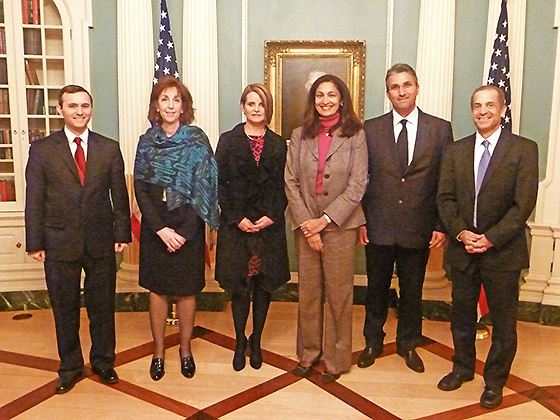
Committee to Protect Journalists Awardees Janet Hinostroza and Nedim Sener With Senior Advisor Tillemann, Assistant Secretary Jacobson, Acting Assistant Secretary Zeya, and Deputy Assistant Secretary Toner

From left to right, Tomicah Tillemann, Senior Advisor for Civil Society and Emerging Democracies; Assistant Secretary of State for Western Hemisphere Affairs Roberta S. Jacobson; Committee to Protect Journalists awardee Janet Hinostroza of Ecuador; Acting Assistant Secretary of State for Democracy, Human Rights, and Labor Uzra Zeya; Committee to Protect Journalists awardee Nedim Sener of Turkey; and Deputy Assistant Secretary of State for European and Eurasian Affairs Mark Toner pose for a photo at the U.S. Department of State in Washington, D.C., on November 21, 2013.